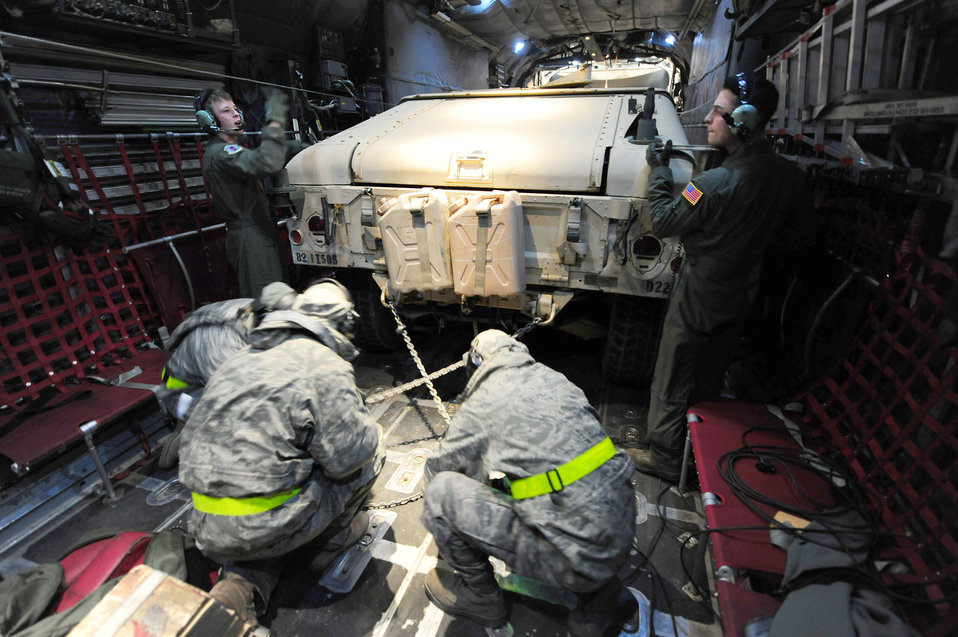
50th Airlift Squadron loadmasters strap down a Humvee on a C-130H Hercules during a Joint Operational Access Exercise Feb. 14, 2011, at Pope Air Force Base, N.C. The exercise trains Soldiers and Airmen to deploy at a moment's notice and sustain the mission anywhere in the world.